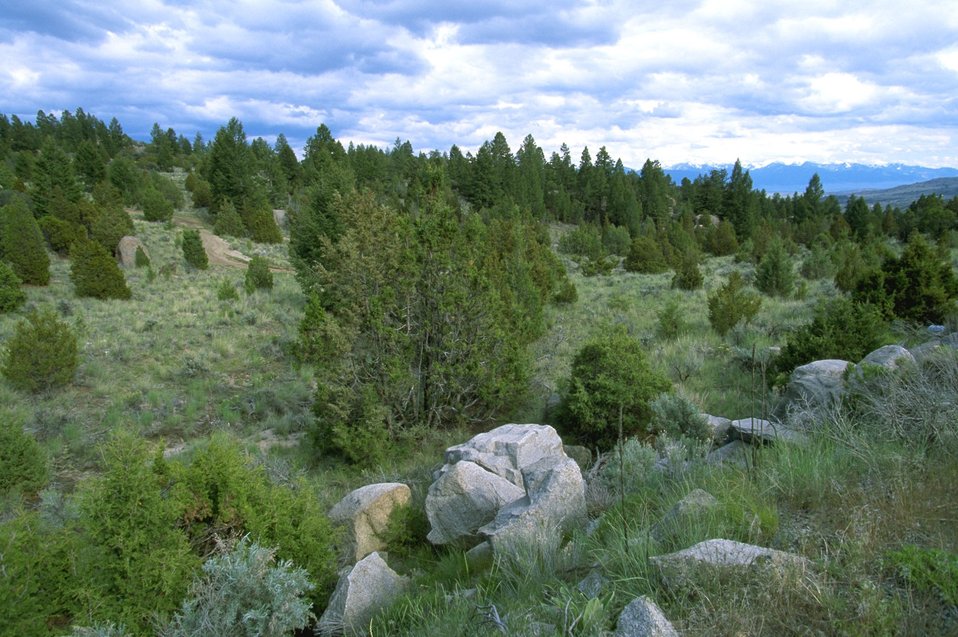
Large rocks and sagebrush with mountains in the distance